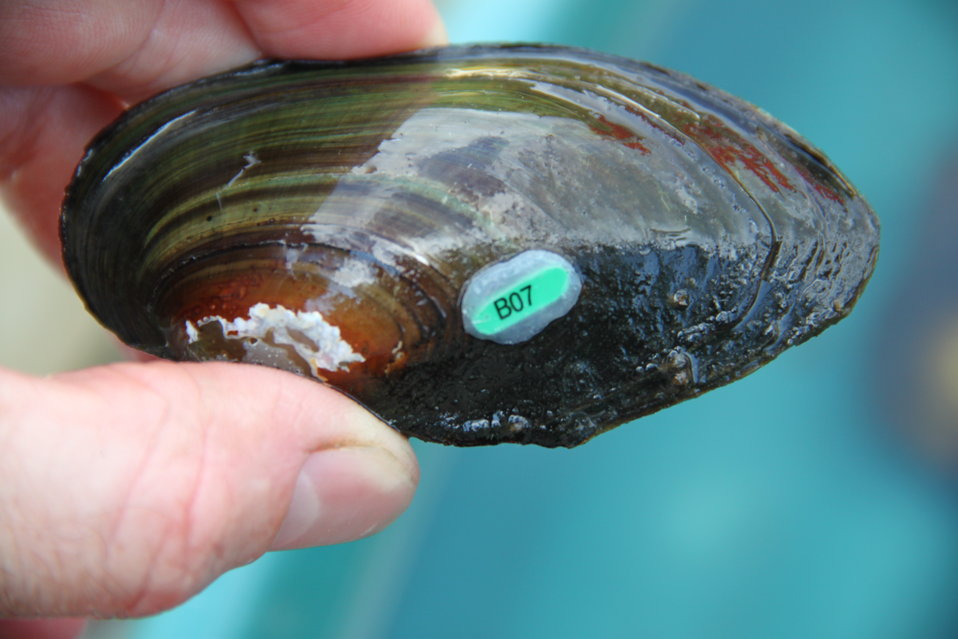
Tagged Mussel

Alpha numeric tag on state listed mussel at Missisquoi NWR